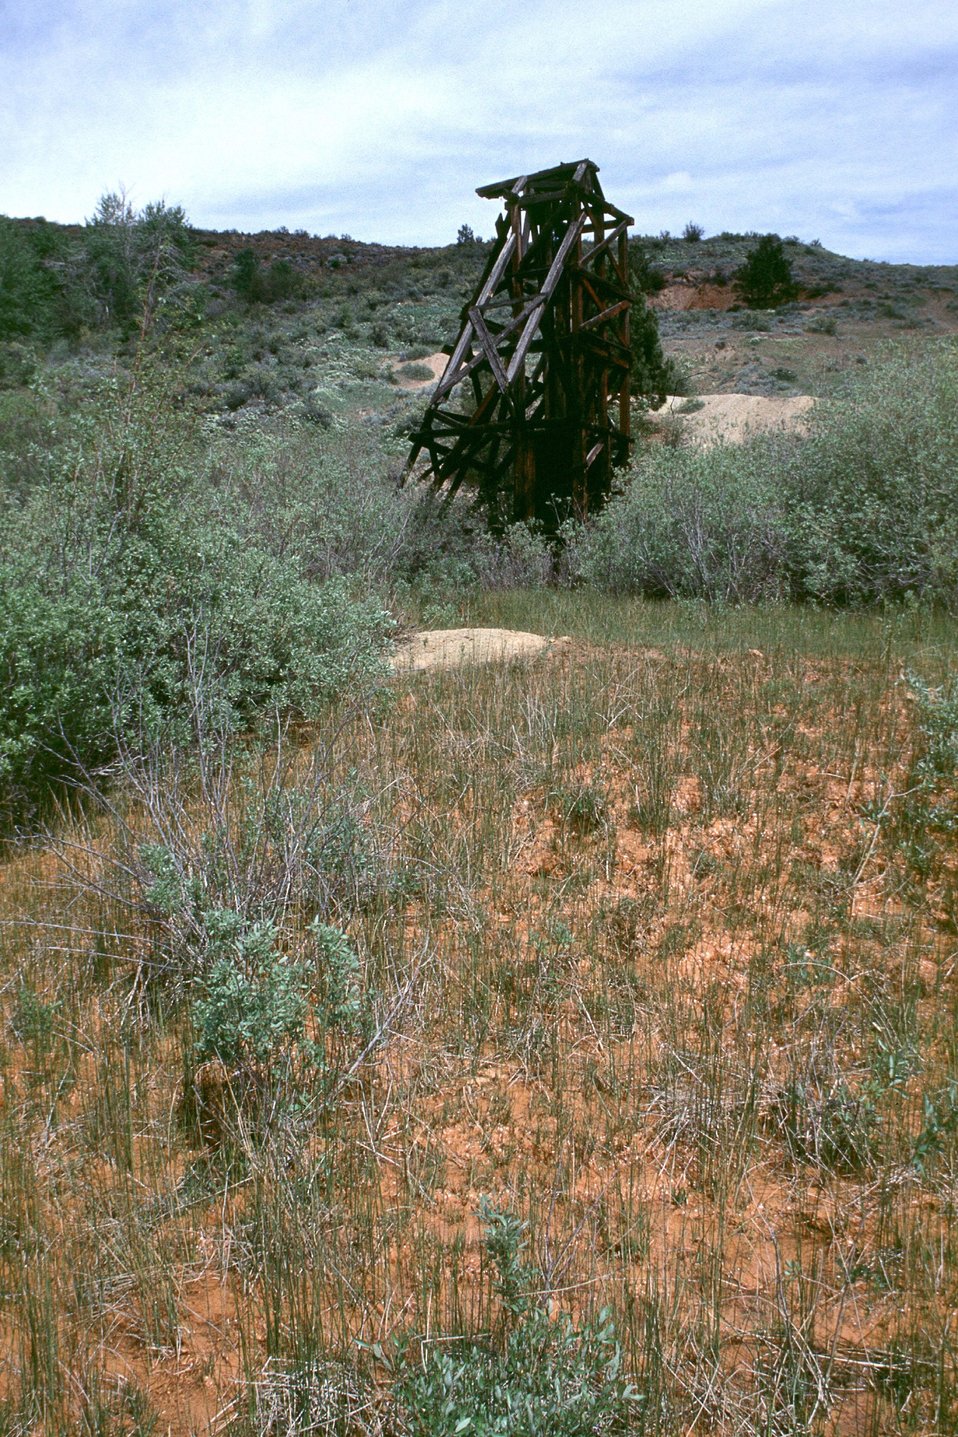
AML Poorman, Vale District, Oregon. Abandoned mine works wooden structure.